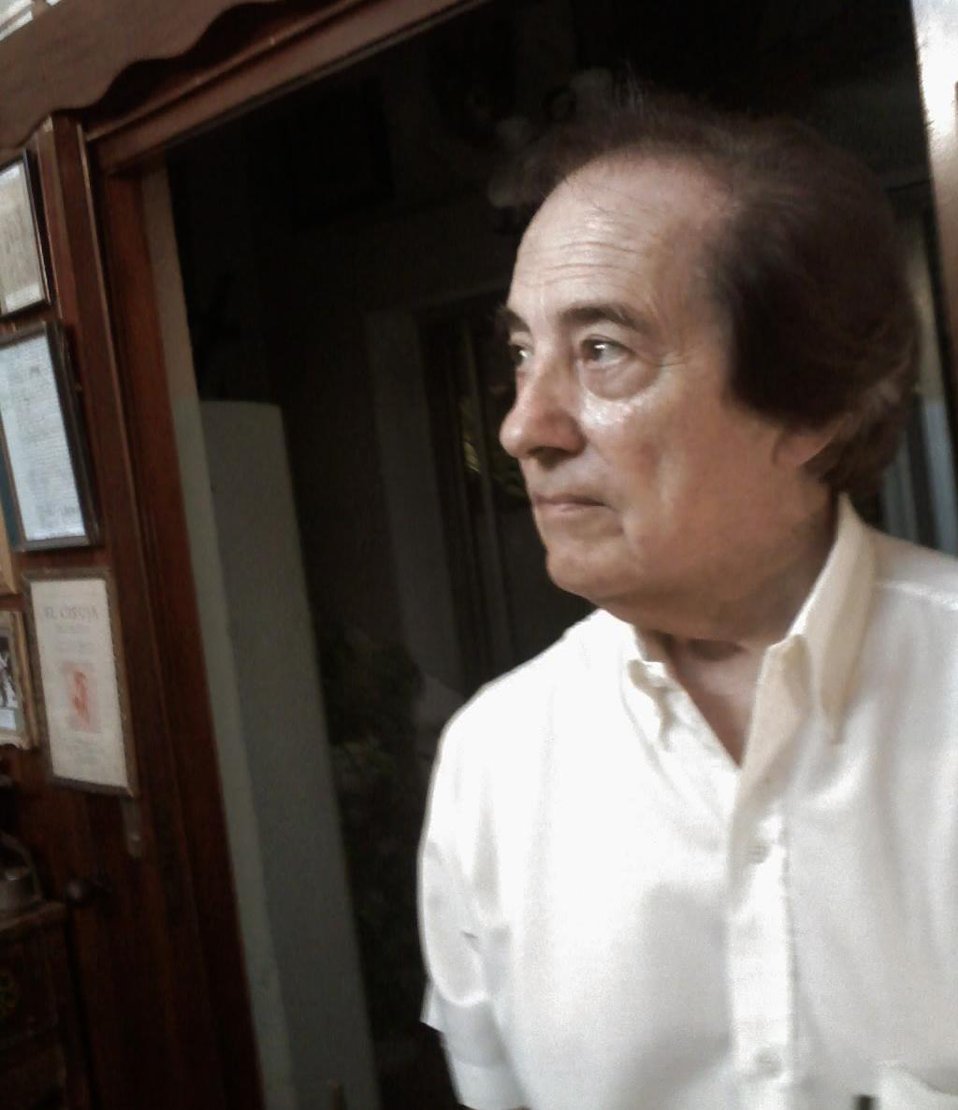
Rolando Goyaud (n. 1932), peridista y escritor argentino.